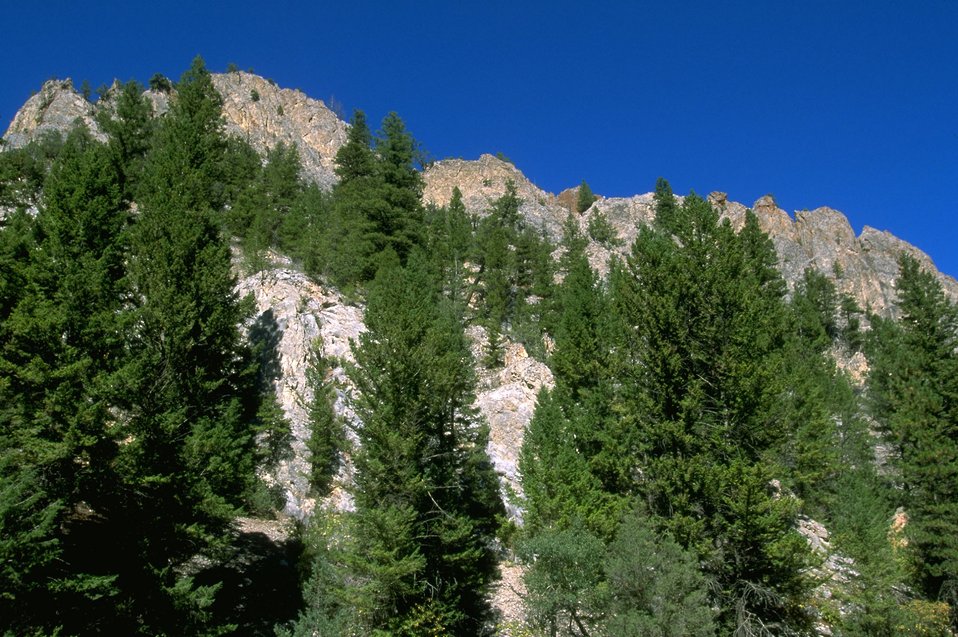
Rattler Gulch-Limestone Cliffs ACEC (area of critical environmental concern)